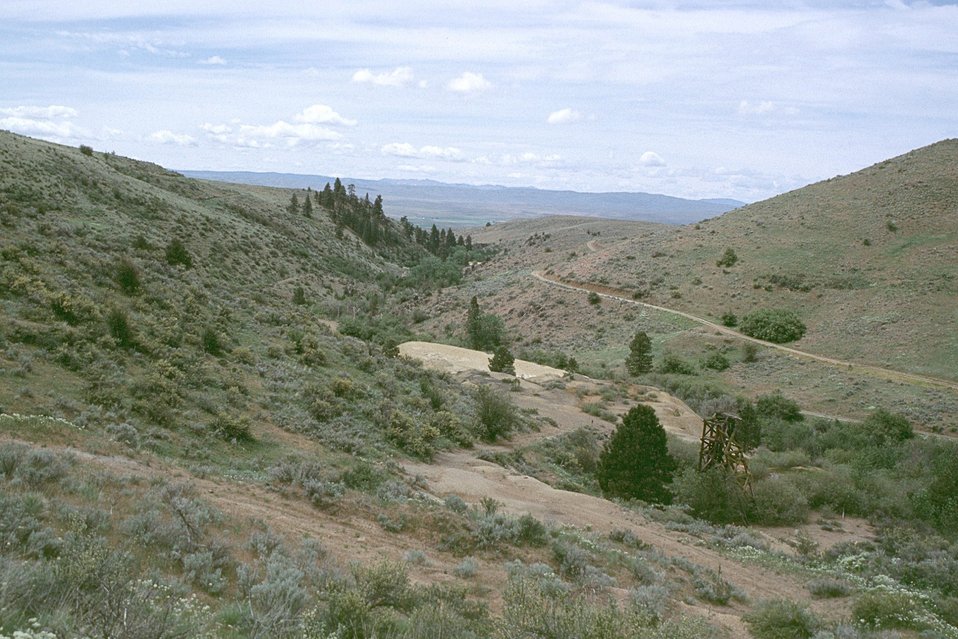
AML Poorman, Vale District, Oregon. Repository.